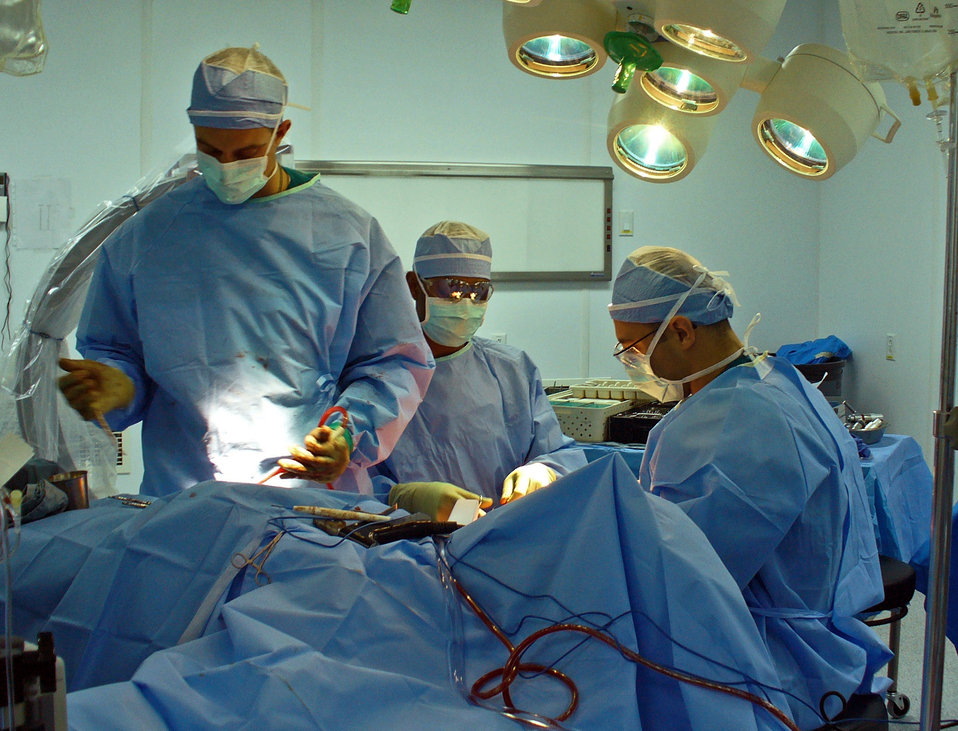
Bagram medical staff 'Smooth Operators'

Maj. (Dr.) Christopher Lebrun (left to right), Senior Airman Raheem Winn-Dickerson and Maj. (Dr.) Dmitry Tuder repair the fingers of an American solider July 30 at the Craig Joint-Theater Hospital in Bagram, Afghanistan. The soldier was injured by an improvised explosive device.